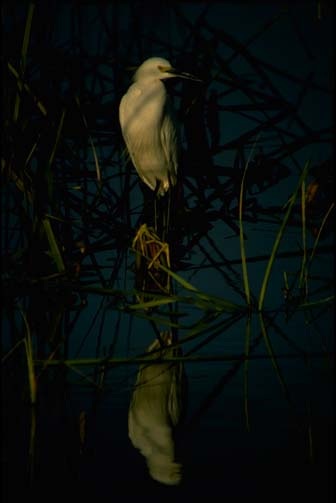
Snowy Egret with its reflection in the Gila River.